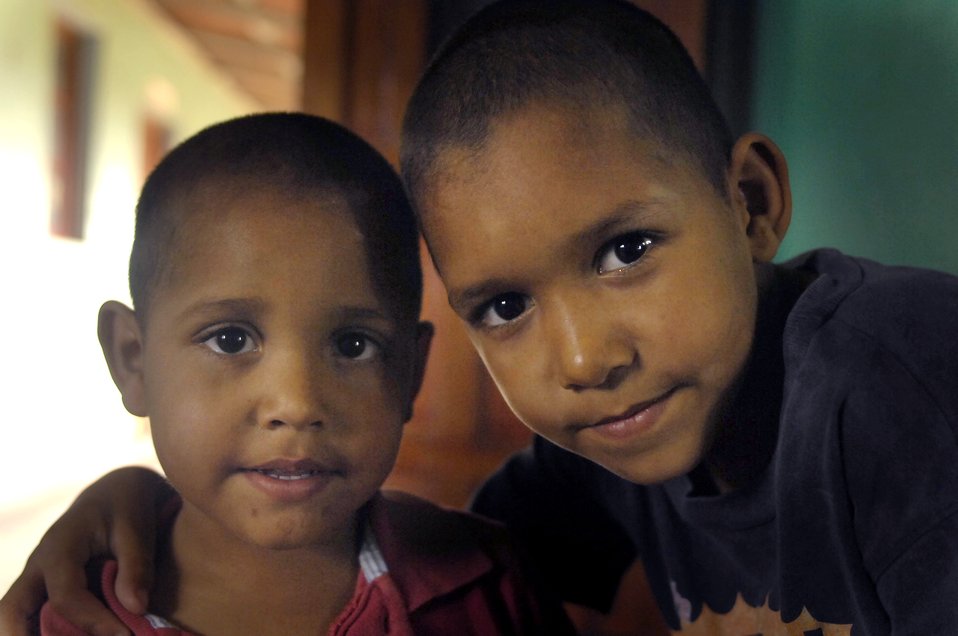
New Horizons-Nicaragua 2007 provides aid, strengthens bonds

Two Nicaraguan boys living at the ABC Feed the Children Orphanage near San Taresa, Nicaragua, are preparing to enjoy food that Airmen brought for a birthday party March 17 at the orphanage. The Airmen are participating in New Horizons-Nicaragua 2007, a $7.25 million joint U.S. and Nicaraguan military humanitarian and training exercise that will provide a new school and medical clinic, as well as free health and veterinary care, giving aid and strengthening bonds between the two nations.